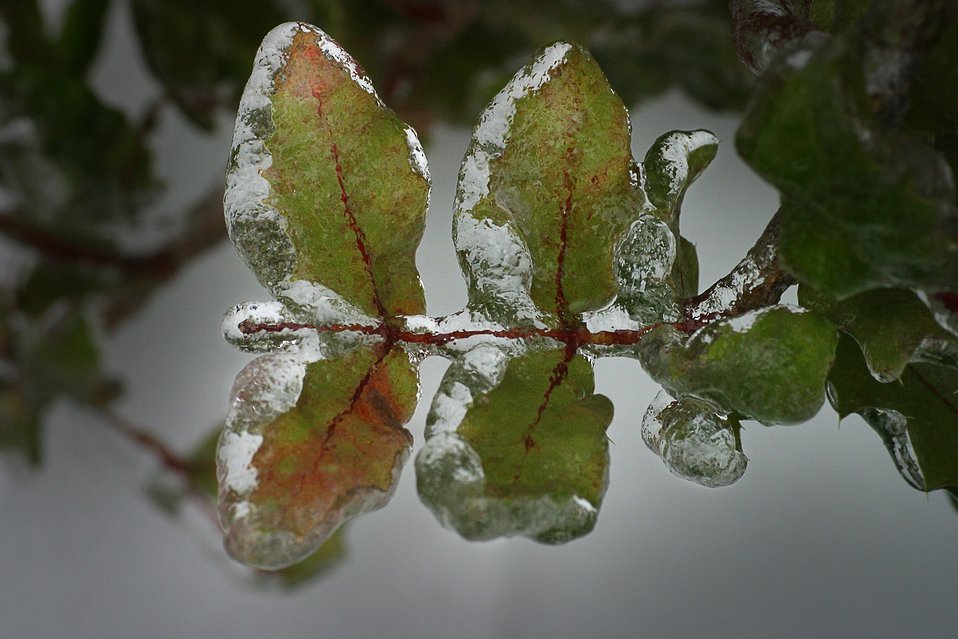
Ice on Oregon Grape leaves.